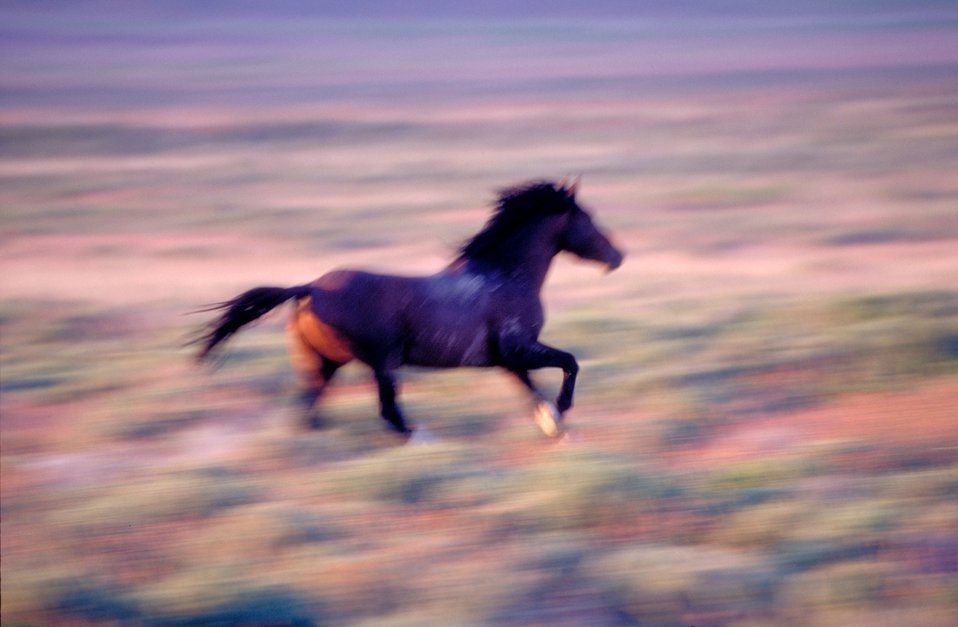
Onaqui Herd near Dugway, Utah.